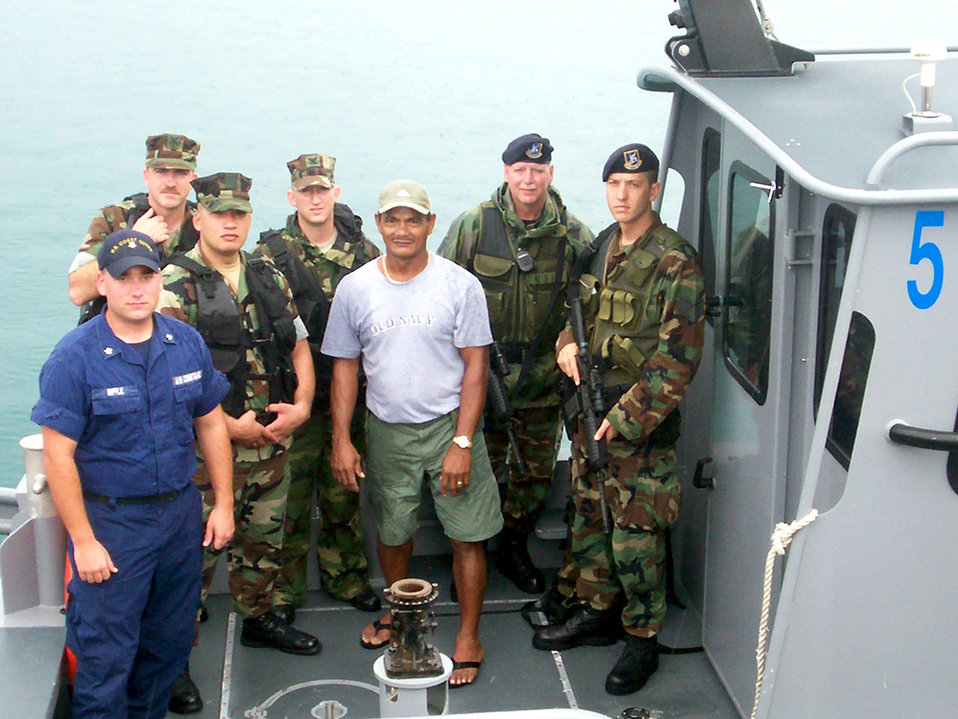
Services unite to patrol Guam's shoreline

The first joint operation involving Air Force, Navy and Coast Guard security forces set out to patrol the shores of Guam July 26. Crewmembers on the first patrol included Petty Officer 1st Class Kevin Hammon, Petty Officer 2nd Class Brandon Johnson, Petty Officer 3rd Class Craig Tobey and Ray Gutierrez, all from the Naval Harbor Patrol; Coast Guard Petty Officer 3rd Class Richard Biffle; and Senior Master Sgt. Ray Johnson and Staff Sgt. Jason Bateman from the 36th Security Forces Squadron.